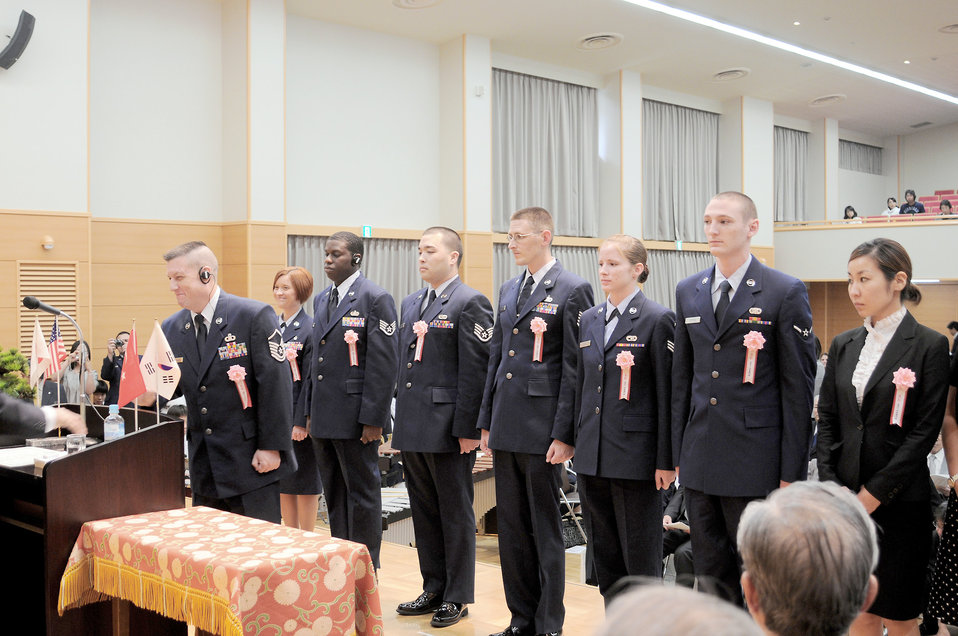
Airmen recognized for community service

Five representatives from the 18th Logistics Readiness Squadron and Airmen from Yokota Air Base, Japan were recognized by the Good Conduct Association of Japan during a ceremony at Meiji Shrine in Tokyo.